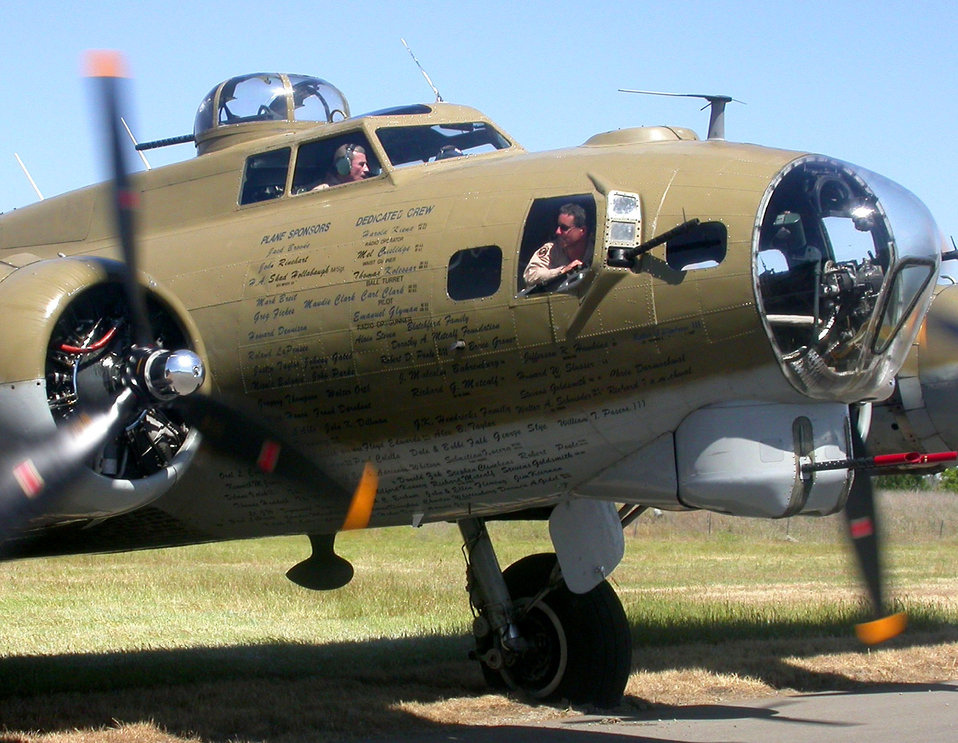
B-17

TRAVIS AIR FORCE BASE, Calif. -- Maj. Gen. John Becker (top), 15th Air Force commander, co-pilots a B-17 Flying Fortress at Nut Tree airport in Vacaville, Calif., after performing a flyover May 27. Chief Master Sgt. David Spector from 60th Air Mobility Wing here monitors the aircraft's movement. The B-17 was the first plane operated by Travis' 6th Air Refueling Squadron.